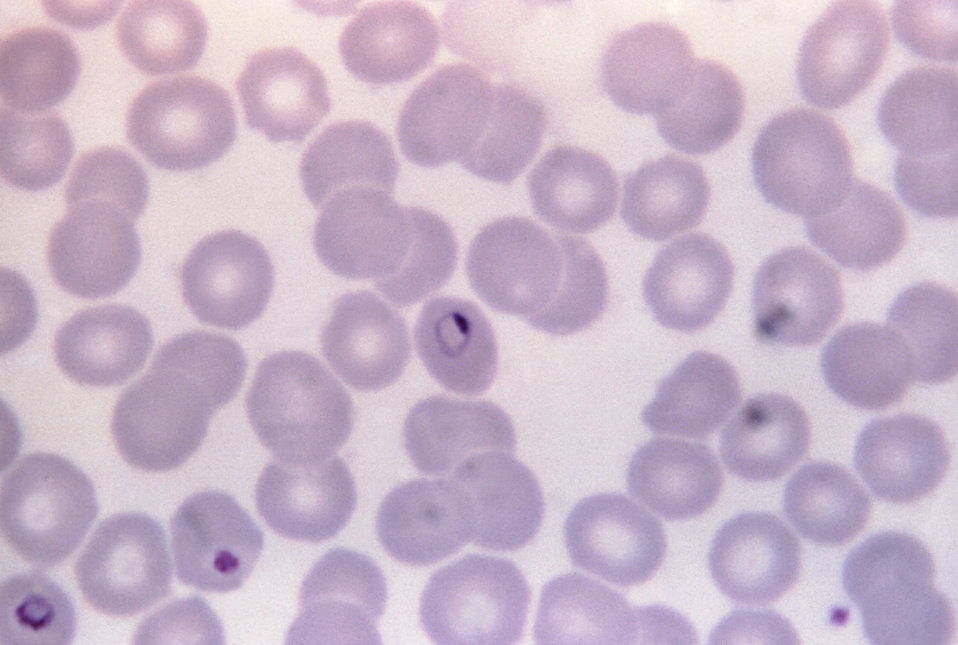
This thin film Giemsa stained micrograph depicts a Plasmodium malariae ring-form trophozoite.